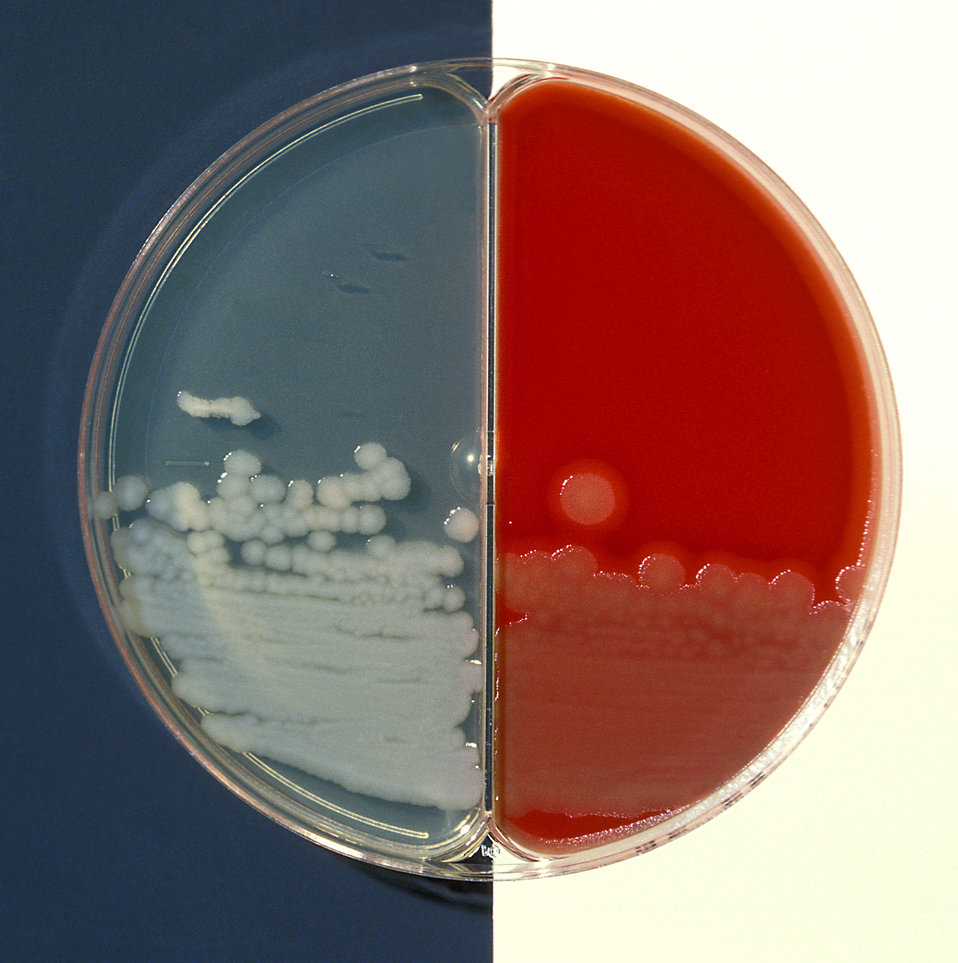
Blood agar and bicarbonate agar plate cultures of Bacillus cereus.